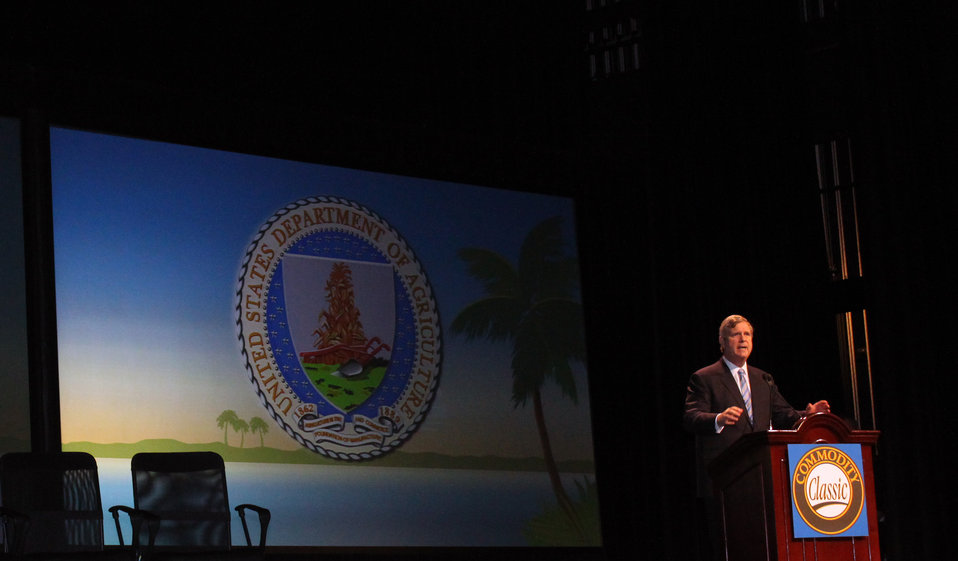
Agriculture Secretary Tom Vilsack gives the Keynote Speech at the 2013 Commodity Classic in Kissimmee, FL on Friday, Mar. 1, 2013.